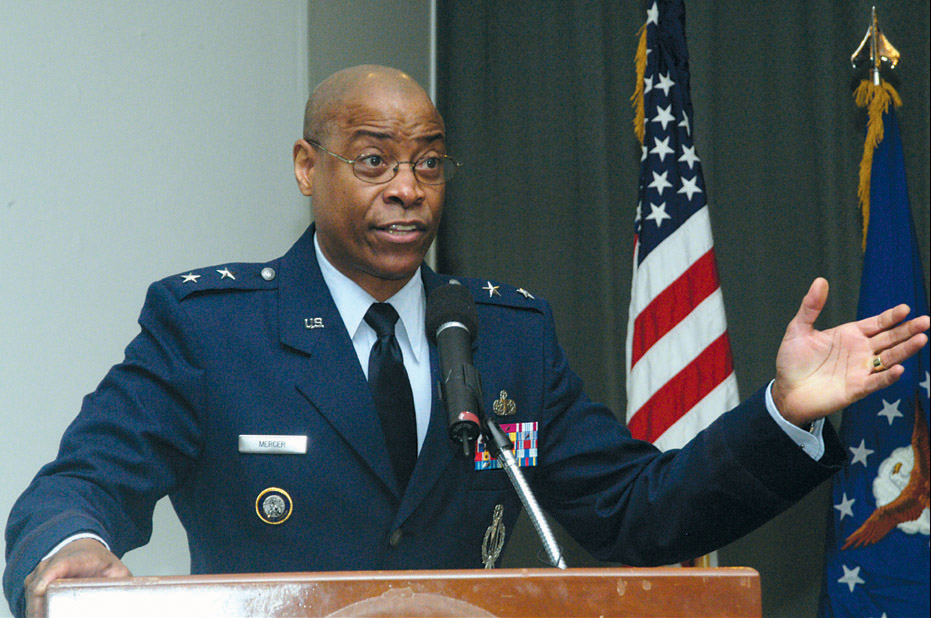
STATCOM general delivers MLK Day speech at Andrews

ANDREWS AIR FORCE BASE, Md. (AFPN) -- Maj. Gen. Roosevelt Mercer Jr. delivers a passionate and informative speech on diversity and its benefit to America during a luncheon here. General Mercer was the guest speaker for the luncheon honoring Dr. Martin Luther King Jr. The general is the director of the Combat and Information Global Operations Directorate with U.S. Strategic Command at Offutt Air Force Base, Neb.